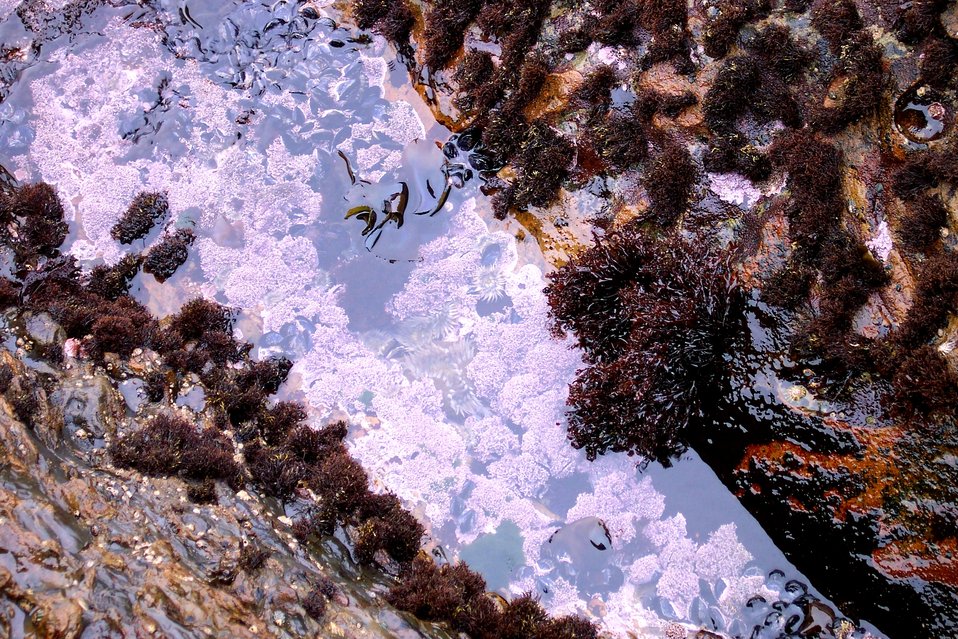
Looking into a tide pool at Point Lobos.